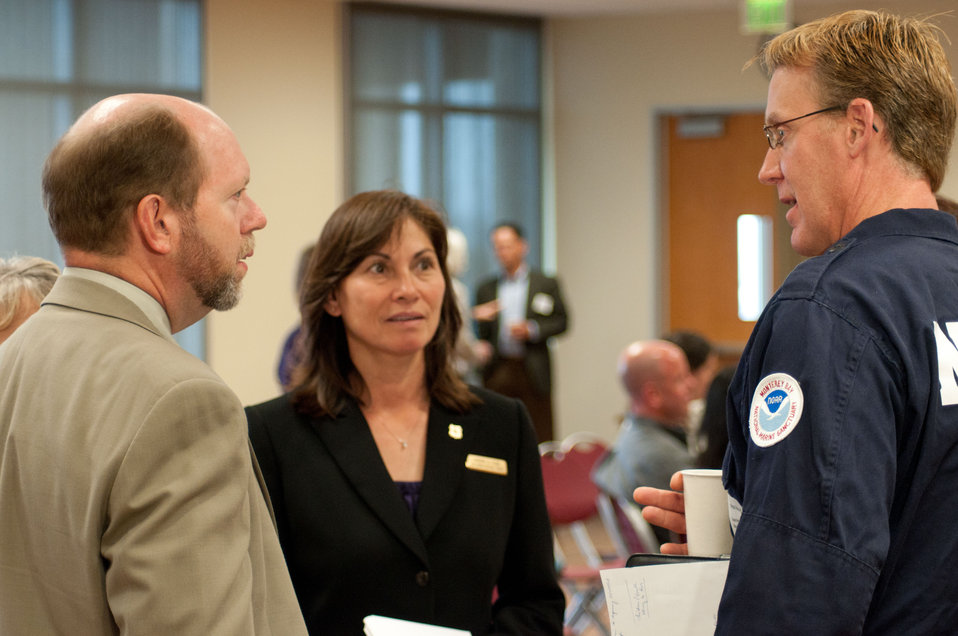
National Oceanic and Atmospheric Administration Monterey Bay National Marine Sanctuary Superintendent Paul Michel (right) has a conversation with U.S. Department of Agriculture (USDA) Region 5 Deputy Regional Forester Ron Ketter (left) and USDA Forrest Service’ Sherry Tune in between observing focus groups during the America’s Great Outdoors Initiative (AGO) Monterey Bay Pilot Area Focus Session in the City of Watsonville’s Civic Plaza in California, on Friday, June 17, 2011. Federal and state resource management agencies came together to identify partnership opportunities and determine actions for protection and enhancement of water quality and publicize voluntary stewardship in the watersheds that drain into the Monterey Bay National Marine Sanctuary. This area includes the counties of San Mateo, Santa Cruz, Santa Clara, San Benito, Monterey, and San Luis Obispo. Key questions identified existing multi-county or multi land use partnerships; what is not being done; possible partnerships - collective resources to maximize the benefits to natural resources and communities; and additional resources that organizations can bring to maximize AGO. President Barack Obama signed the initiative on April 16, 2010 to develop a 21st Century conservation and recreation agenda.